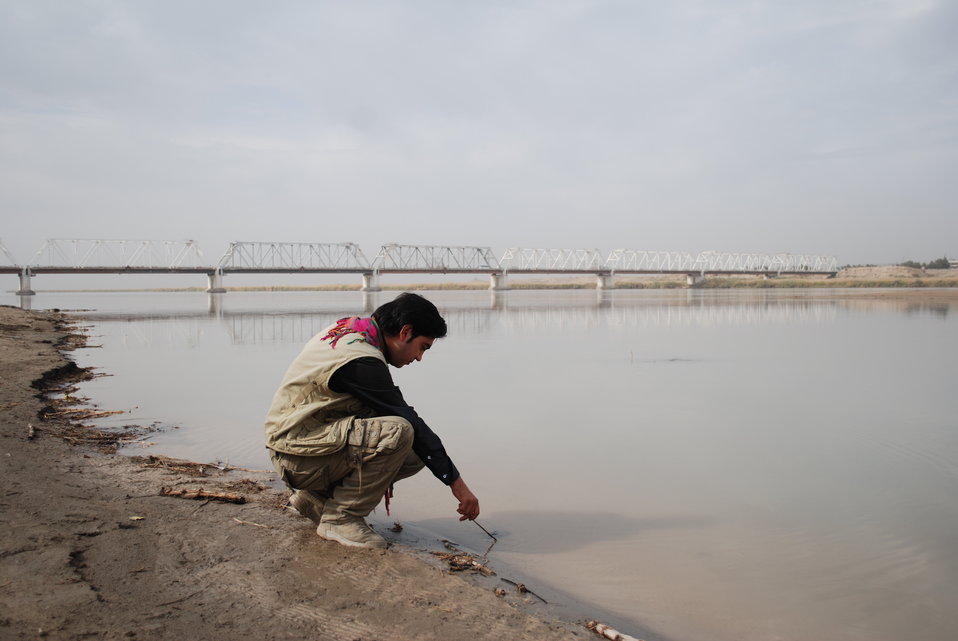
'On the Road' in Balkh Province